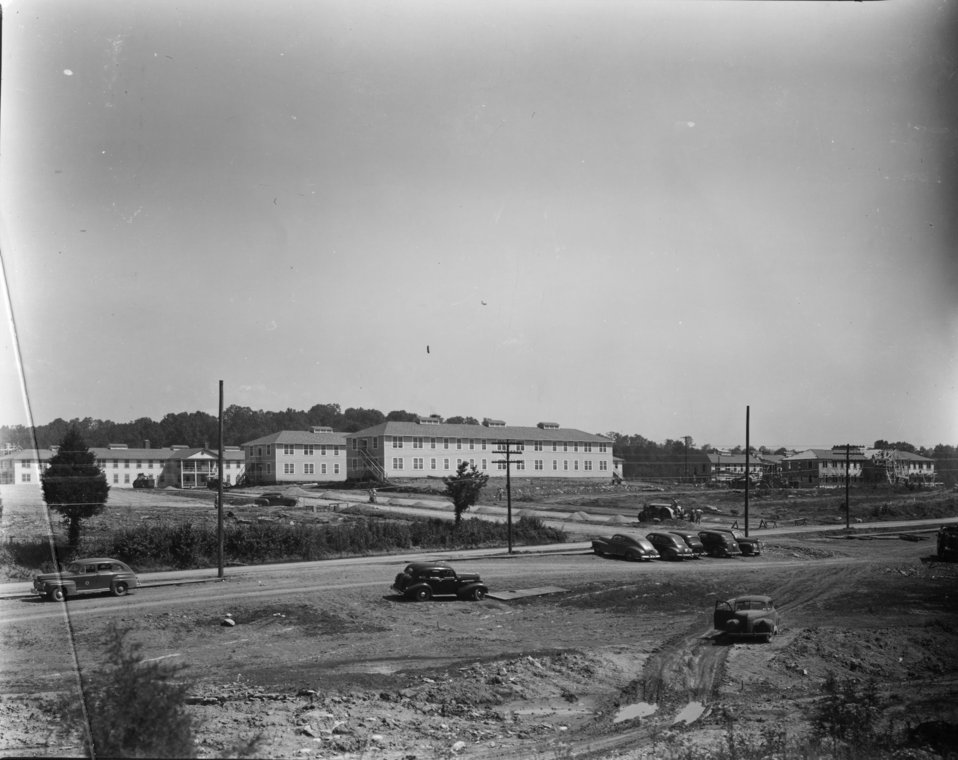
Housing at Oak Ridge